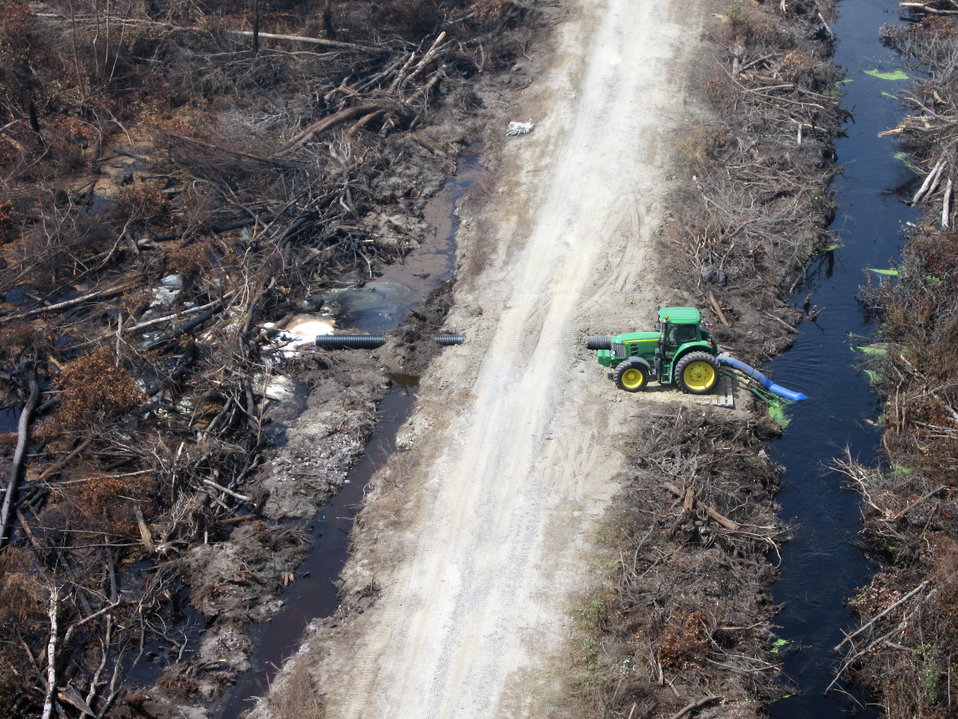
Pumping operation

Suffolk, VA, August 2011: A tractor-driven crisafulli pump draws water out of Corapeake Ditch and pumps it through a pipe buried underneath the road to flood burning peat at the Lateral West Fire in Great Dismal Swamp.